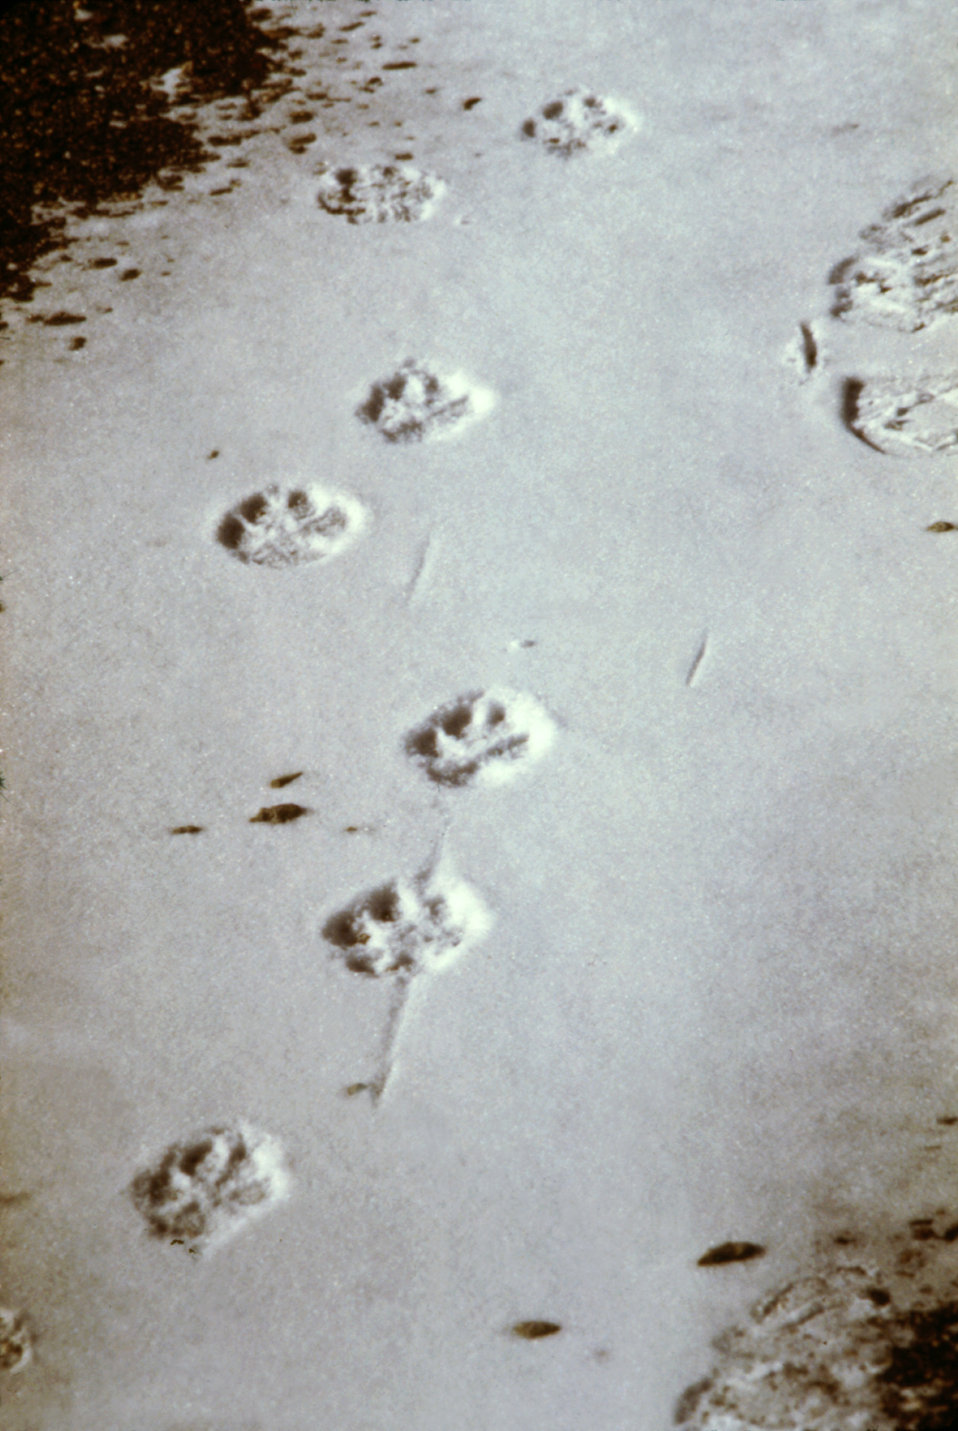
These coyote, Canis latrans tracks were found in an Estes Park, Colorado campground during a plague and tick fever study.